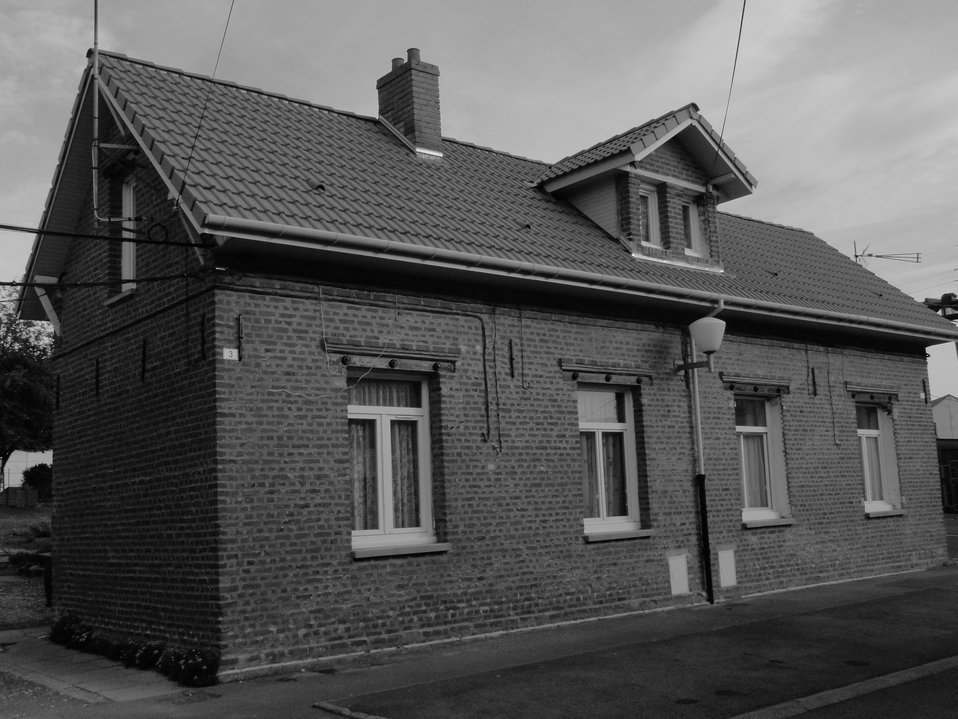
Fran√ßais†: Cit√©s de la Fosse n¬∞ 5 - 5 bis - 5 ter de la Compagnie des mines de Marles, Auchel et Calonne-Ricouart, Pas-de-Calais, Nord-Pas-de-Calais, France.